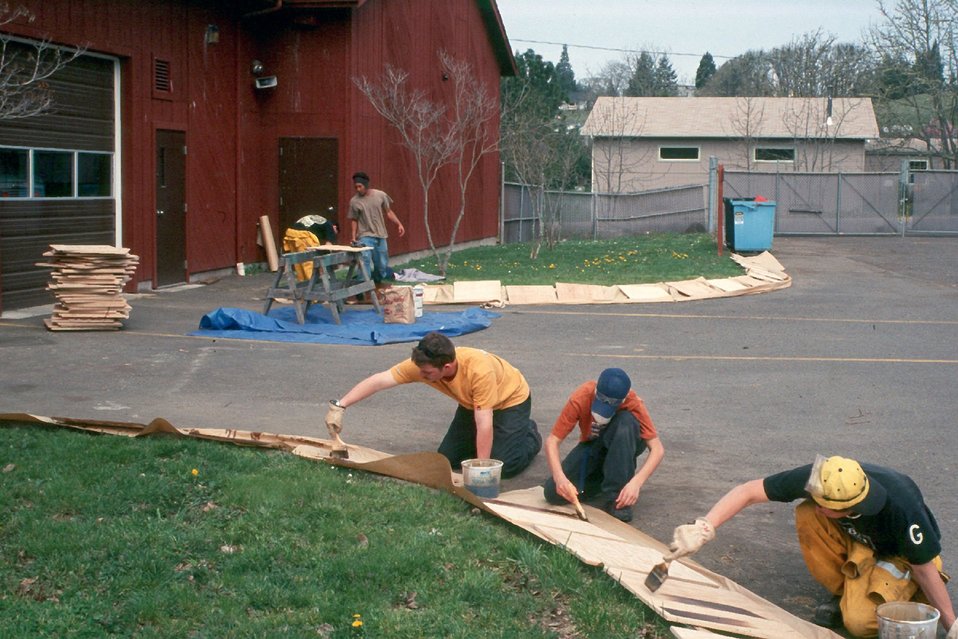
Kids from Lane County Youth Services are constructing /painting No Dumping signs to be posted on Public Lands.